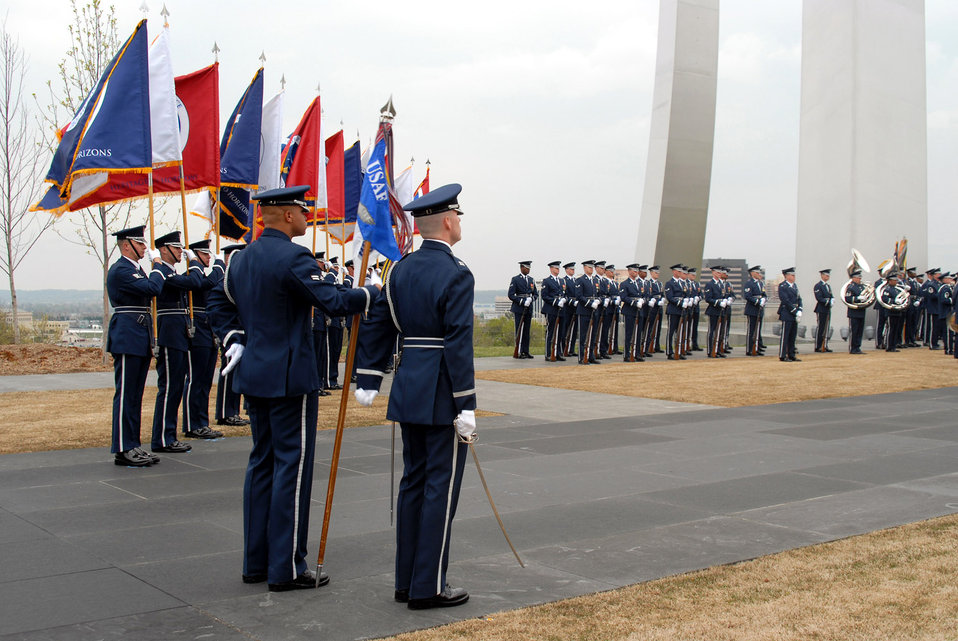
Air Force Review held at memorial

The Air Force Honor Guard performs a pass and review ceremony for the reviewing official, Maj. Gen. L. Robert Smolen, April 14 at the Air Force Memorial in Arlington, Va. General Smolen is the Air Force District of Washington commander.